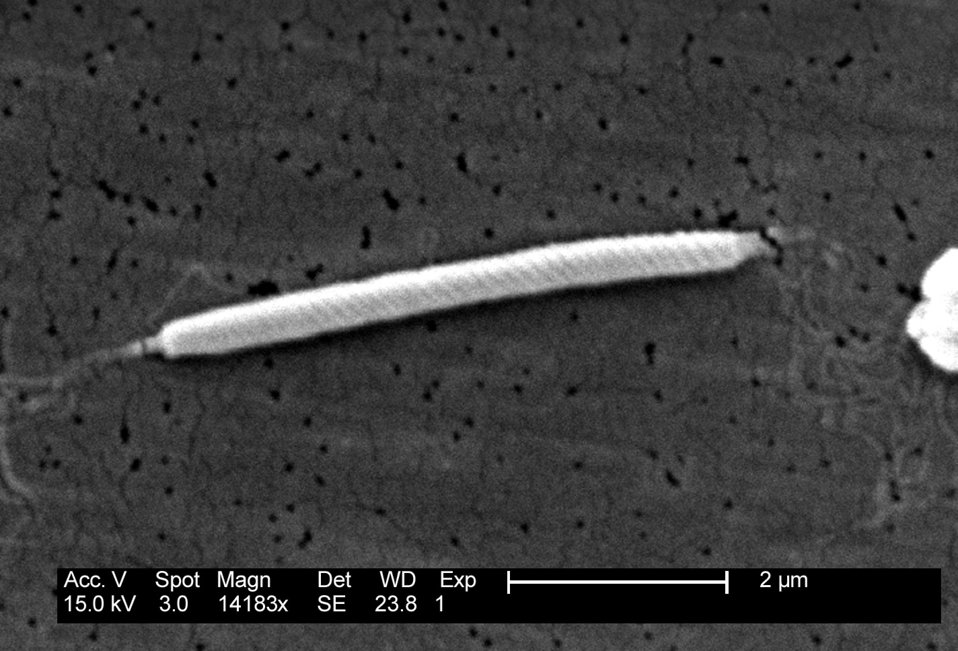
This scanning electron micrograph depicts a Flexispira rappini bacterium, magnified 14,183x.